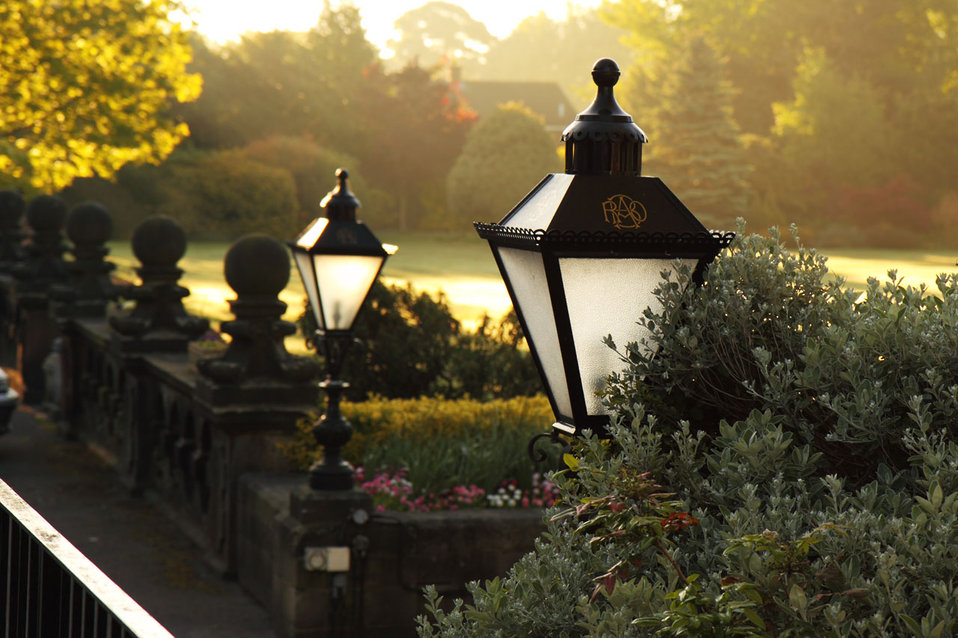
Decorative lamps

Old fashioned decorative lights.